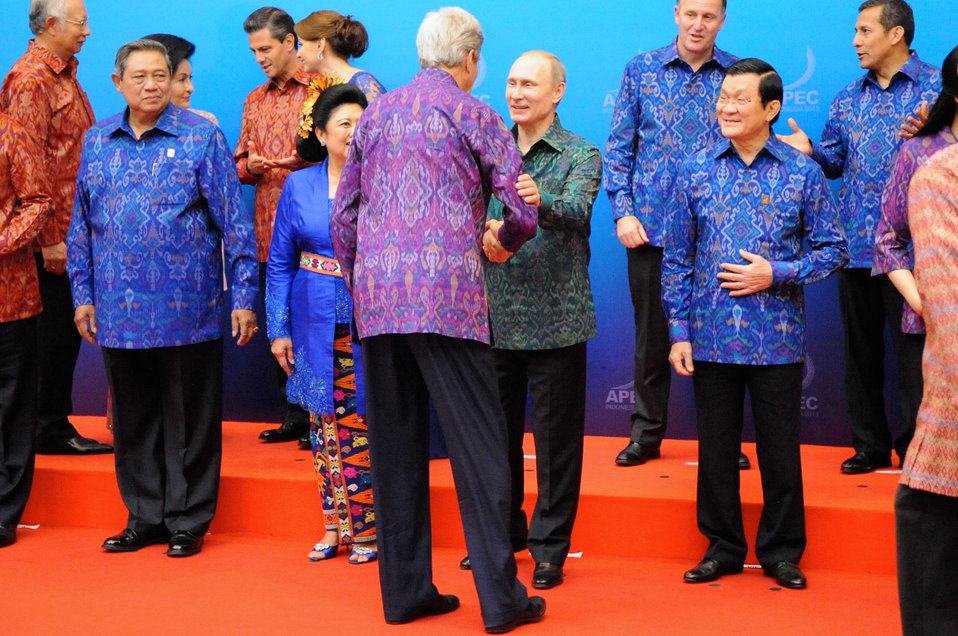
Secretary Kerry Meets Russian President Putin at APEC

U.S. Secretary of State John Kerry, dressed in a traditional batik shirt, speaks with Russian President Vladimir Putin before the two join other heads of delegation for a family photo before the APEC Leaders Dinner on October 7, 2013. in Bali, Indonesia.